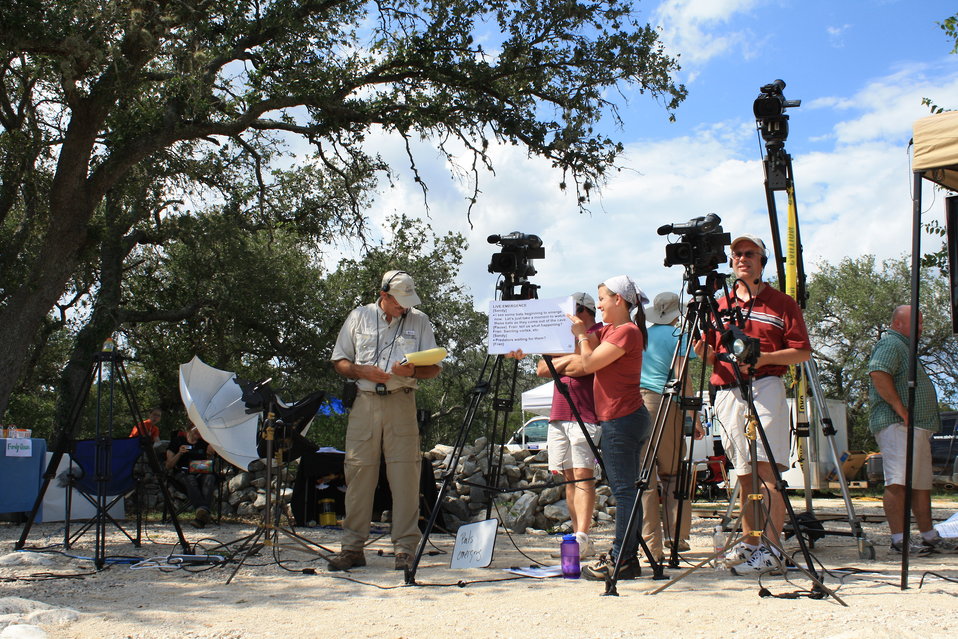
Filming BatsLIVE